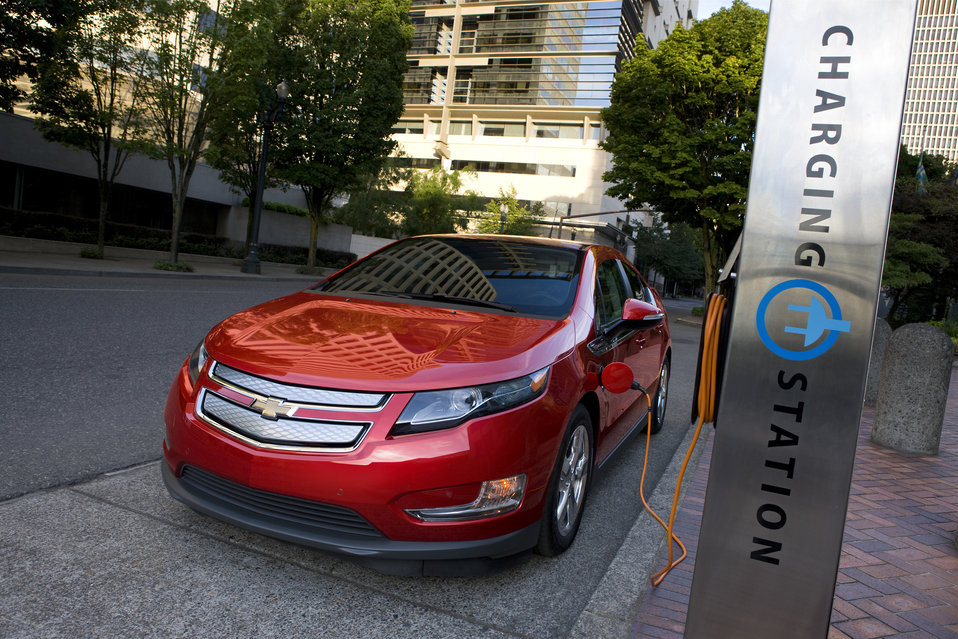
THE 2011 CHEVROLET VOLT AT A CHARGING STATION.

The volt battery is based on a cathode technology developed at Argonne National Laboratory, which will make the battery safer, longer-lived and more powerful.